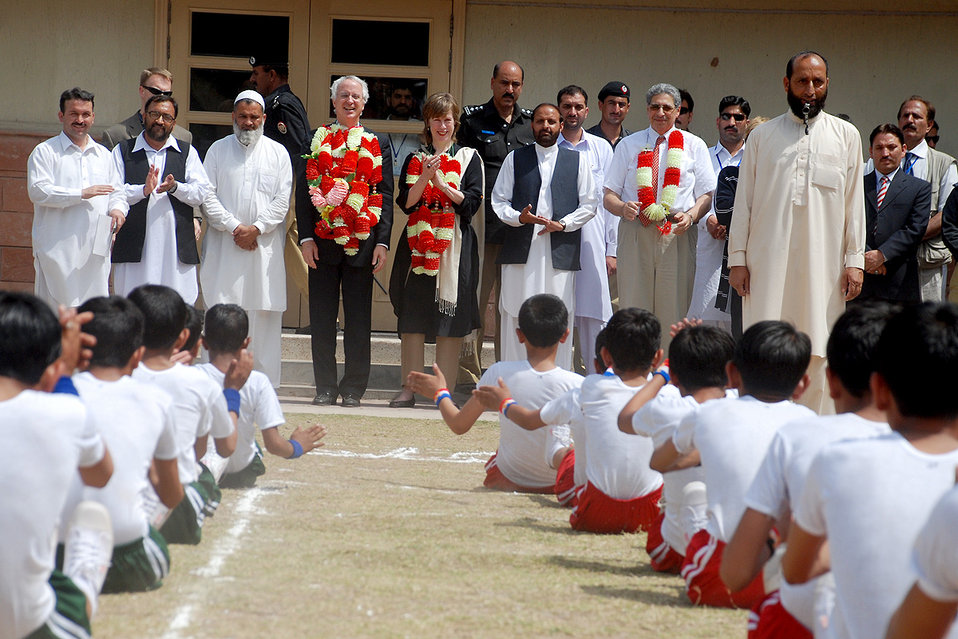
Envoy Highlights U.S. Development

USAID has built two schools in the Arja community – the Girls College and the Government Boys High School. The two schools together have 958 students and serve arja as well as 10,000 catchment populations in 16 surrounding hamlets and villages. By the end of 2013, USAID will have built a total of 77 education and health facilities in the two districts. All the buildings are designed to meet internationally recognized standards and provide access for the disabled.